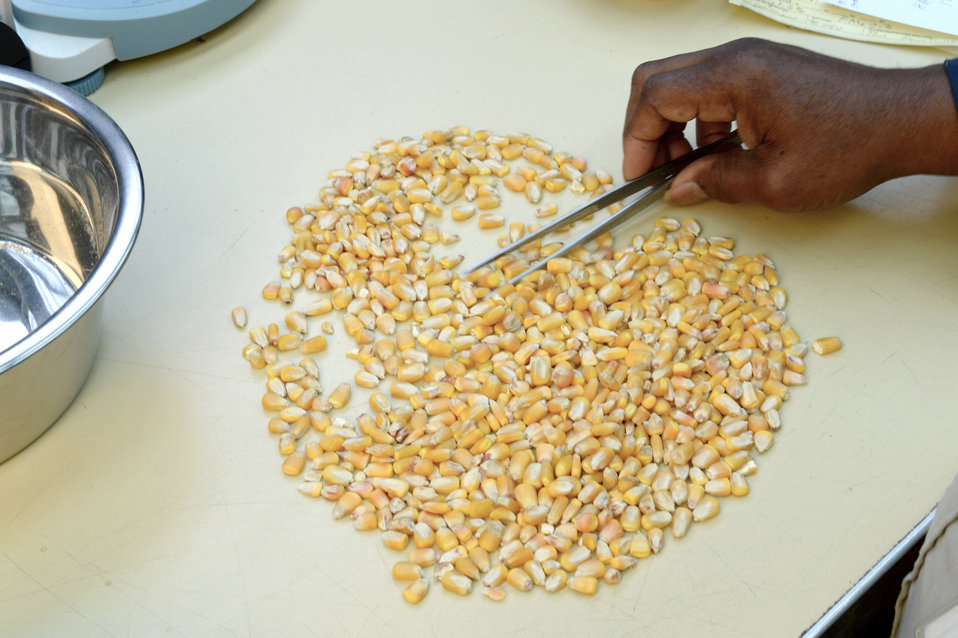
A U.S. Department of Agriculture (USDA) Grain Inspection, Packers and Stockyards Administration (GIPSA) Federal Grain Inspection Service (FGIS) scientist tests corn at the FGIS inspection laboratory in New Orleans, LA on Monday, Nov. 18, 2013.